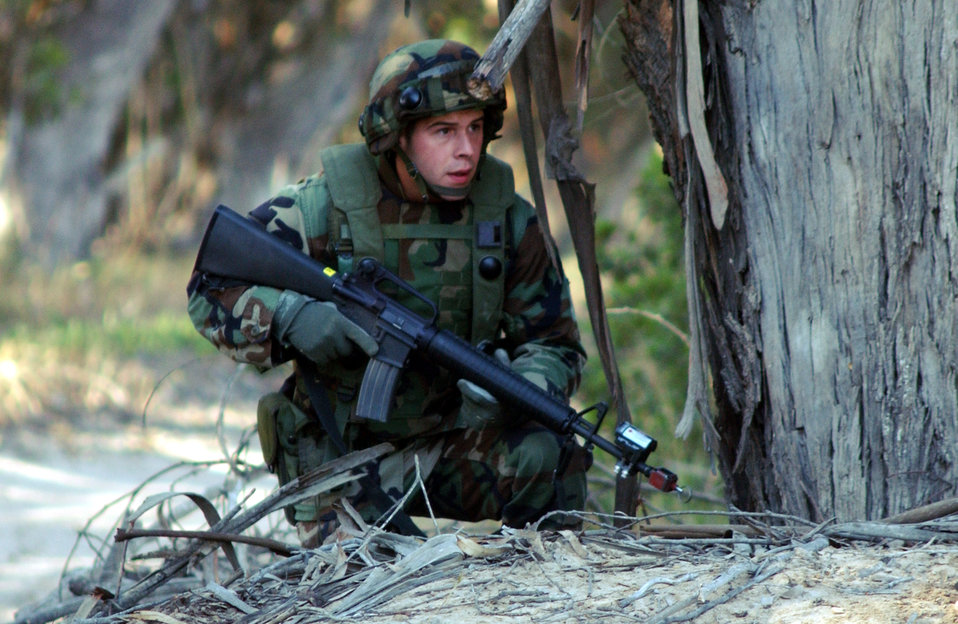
A game of hide and seek

VANDENBERG AIR FORCE BASE, Calif. -- Airman 1st Class Steven Israel takes cover from opposing forces during the security forces tactics competition for Guardian Challenge here May 4. Guardian Challenge, the world's premier space and missile competition, is an annual four-day event. It tests the wartime readiness of Air Force Space Command's Airmen in spacelift, ICBM operations, communications, maintenance, helicopter operations, security forces and food preparation. Airman Israel is assigned to the 21st Space Wing at Peterson Air Force Base, Colo.